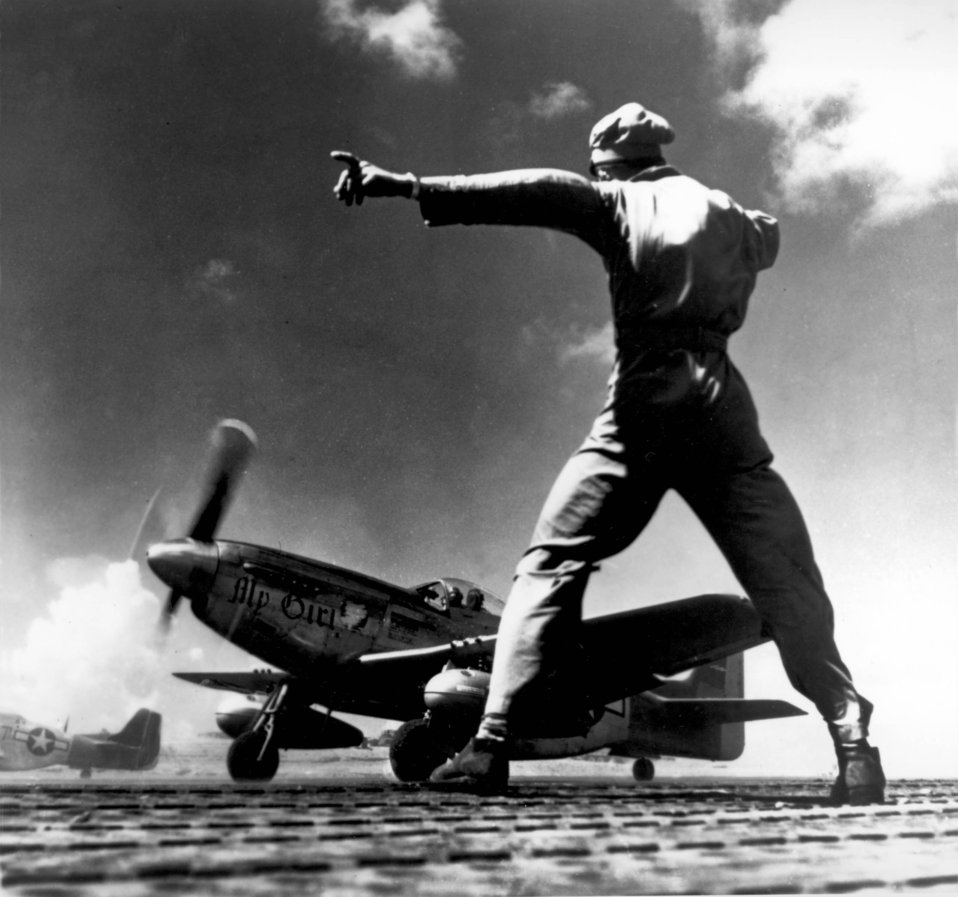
P-51and

1940's -- A North American P-51 takes off from Iwo Jima, in the Bonin Islands. From this hard-won base our fighters escorted the B-29s on bombing missions to Japan, and also attacked the Empire on their own.